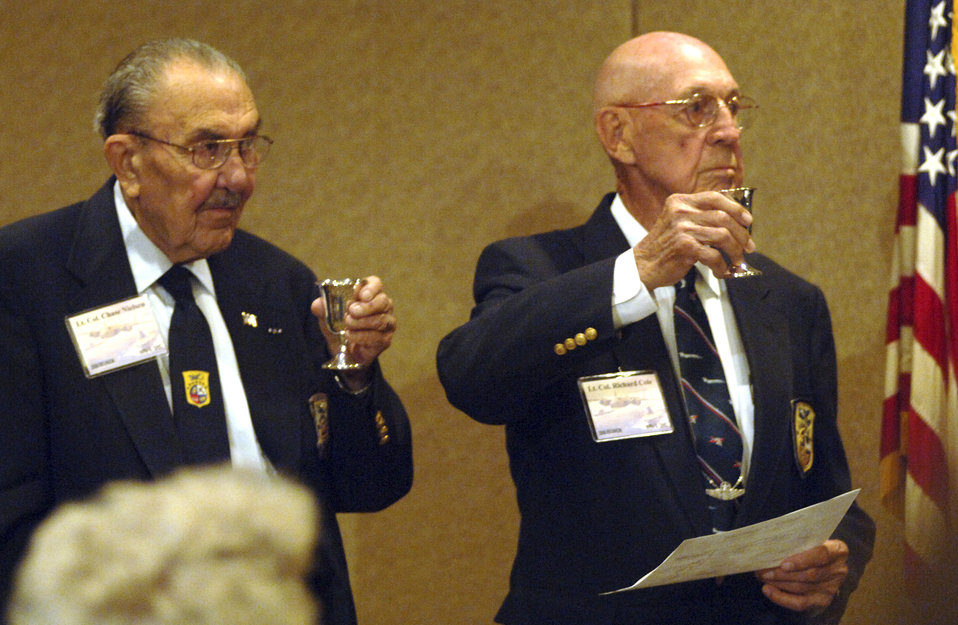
Doolittle Raiders celebrate 64th reunion

Doolittle Raiders, retired Lt. Col. Dick Cole (right) and retired Lt. Col. Chase Nielsen, raise their goblets to toast their fellow Raiders at the group's 64th reunion in Dayton, Ohio, on Tuesday, April 18, 2006.